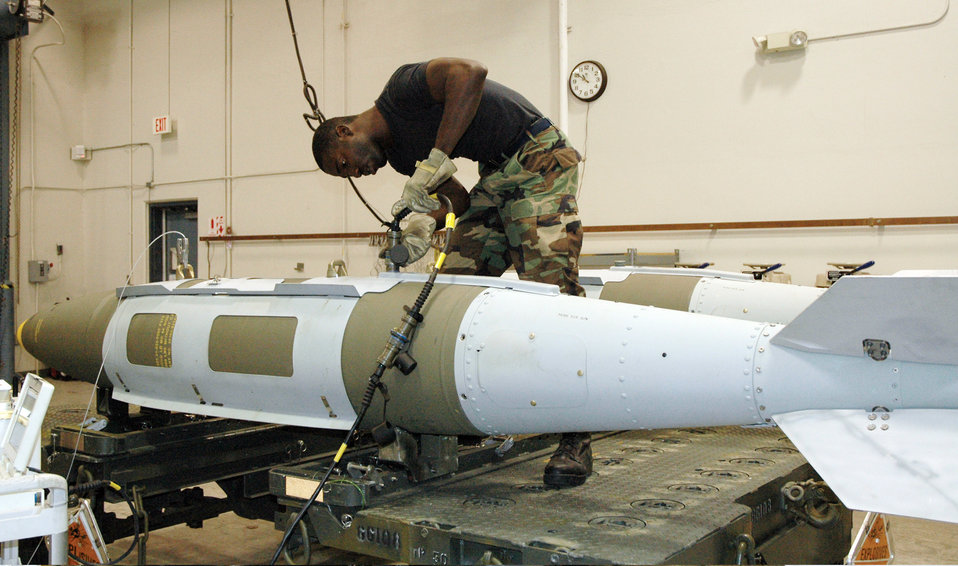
Bomber support

FORT POLK, La. -- Airman 1st Class Rodney Lucas, 2d Munitions Squadron precision guided maintenance crew member, attaches a cable to a Joint Direct Attack Munition for testing after assembly. Internal tests ensure the tail kit on the weapon is serviceable.